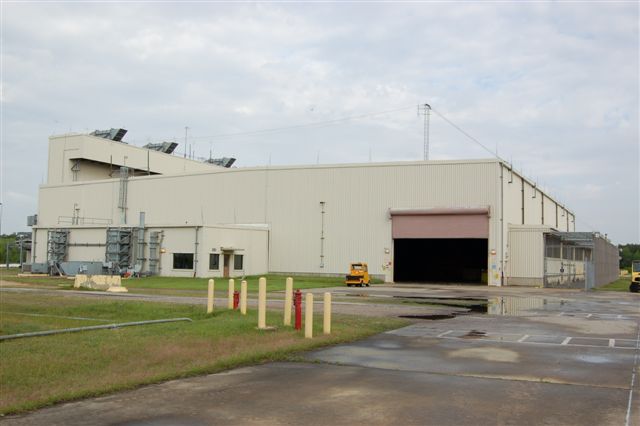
Glass Waste Storage Building #1 at Savannah River Site.
At the Glass Waste Storage Building, canisters are lowered into an underground reinforced concrete vault containing 2,286 individual canister supports. The canisters will be stored at SRS until a Federal repository is established.